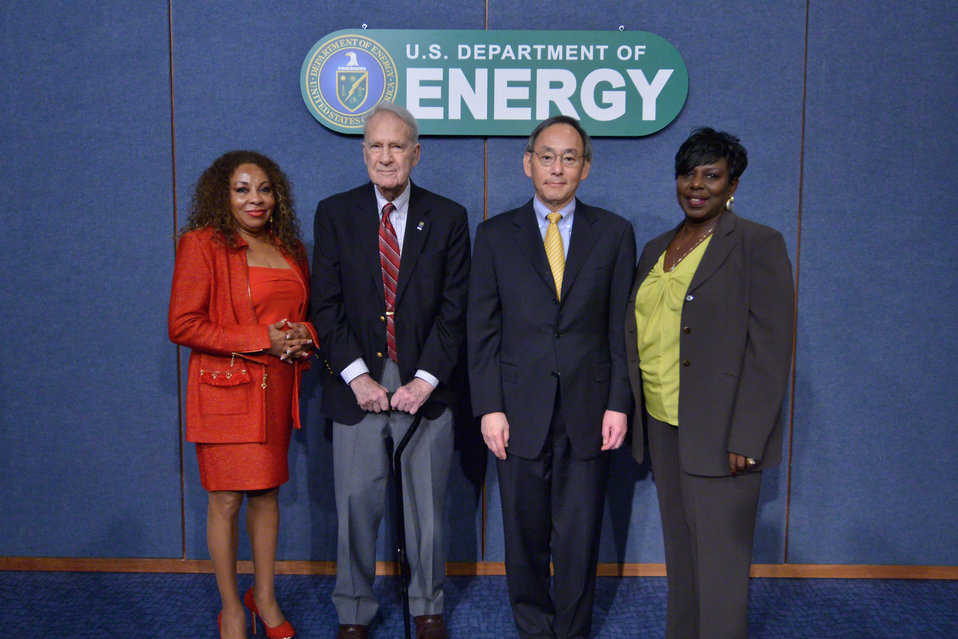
1 HSS

Charter employees from the Office of Health, Safety, and Security with Secretary Steven Chu, current Secretary of Energy, and Secretary James Schlesinger, first Secretary of Energy.